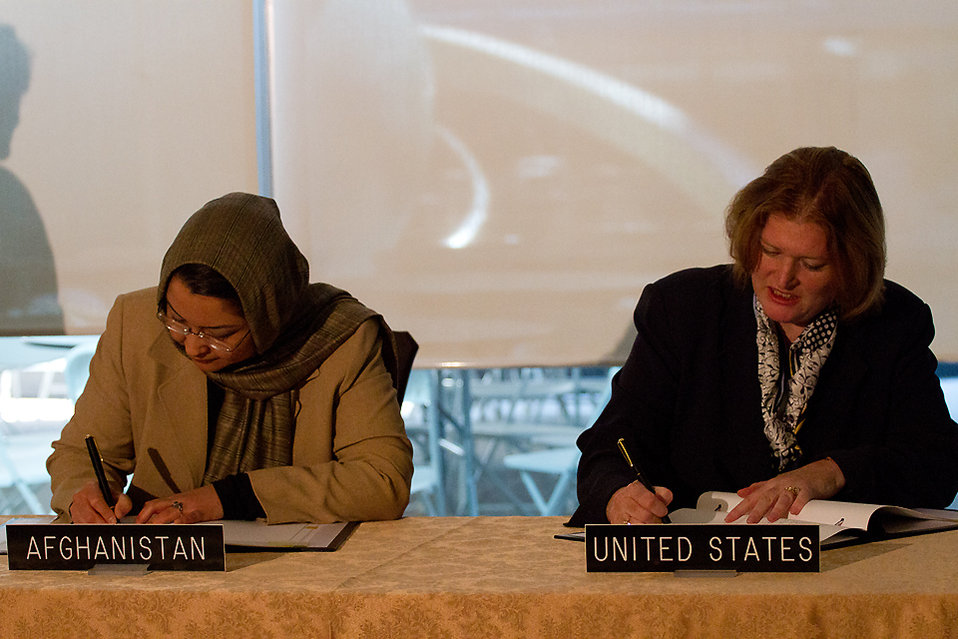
Assistant Secretary Richard and Afghan Minister of Public Health Dalil

Assistant Secretary for Population, Refugees, and Migration Anne C. Richard and Afghan Minister of Public Health Dr. Suraya Dalil sign a memorandum of understanding at the U.S. Department of State in Washington, D.C., on April 25, 2012.